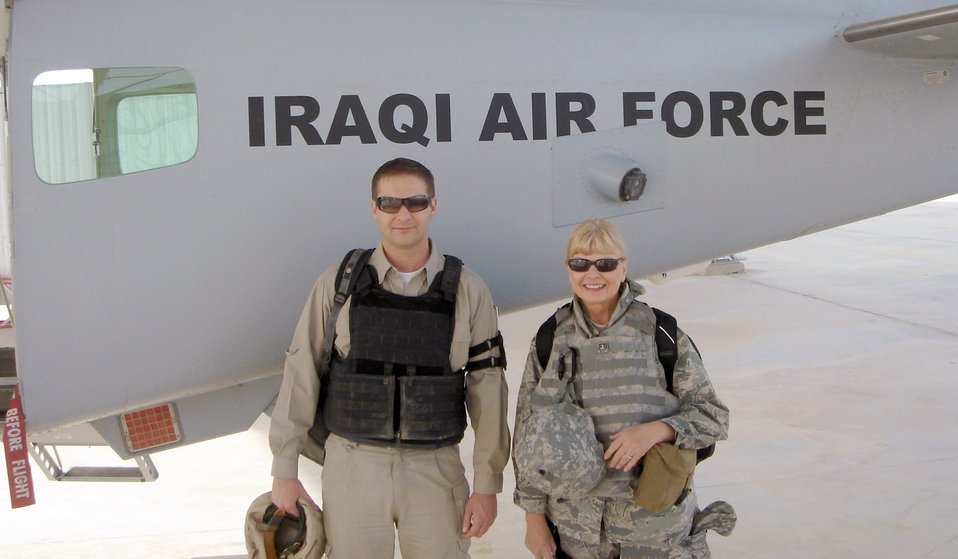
Language Institute's mission reaches for the future

At Kirkuk Regional Air Base, Iraq, Laura MacKenzie and Johnathon Turner stand in front of an Iraqi air force trainer in 2009. Ms. MacKenzie volunteered for the combat zone from the Defense Language Institute at Lackland Air Force Base, Texas, and was the chief of English language training for the Multi-National Security Transition Command-Iraq. Mr. Turner was an instructor pilot.